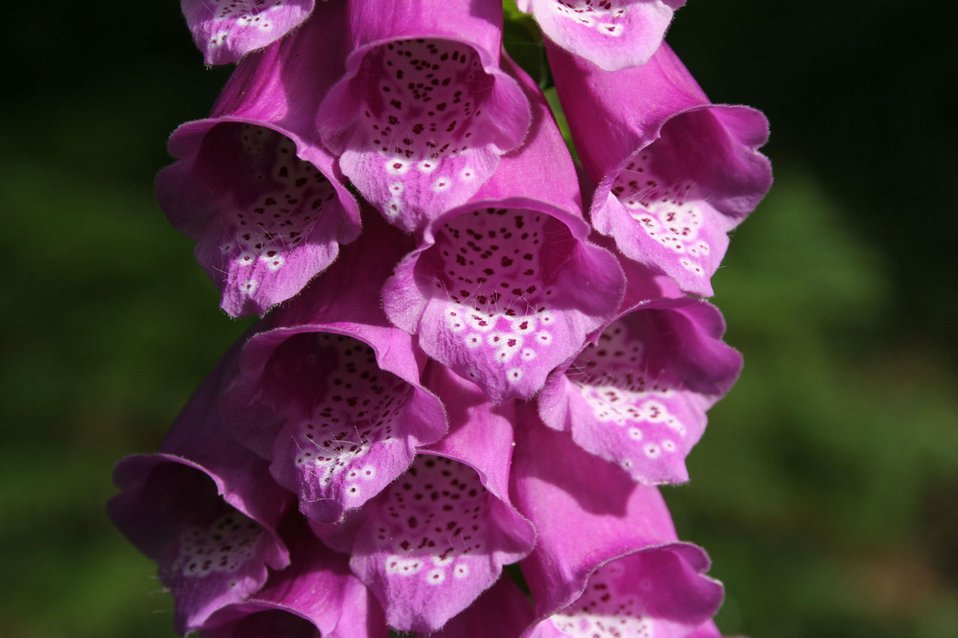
Foxgloves flower - digitalis purpurea.